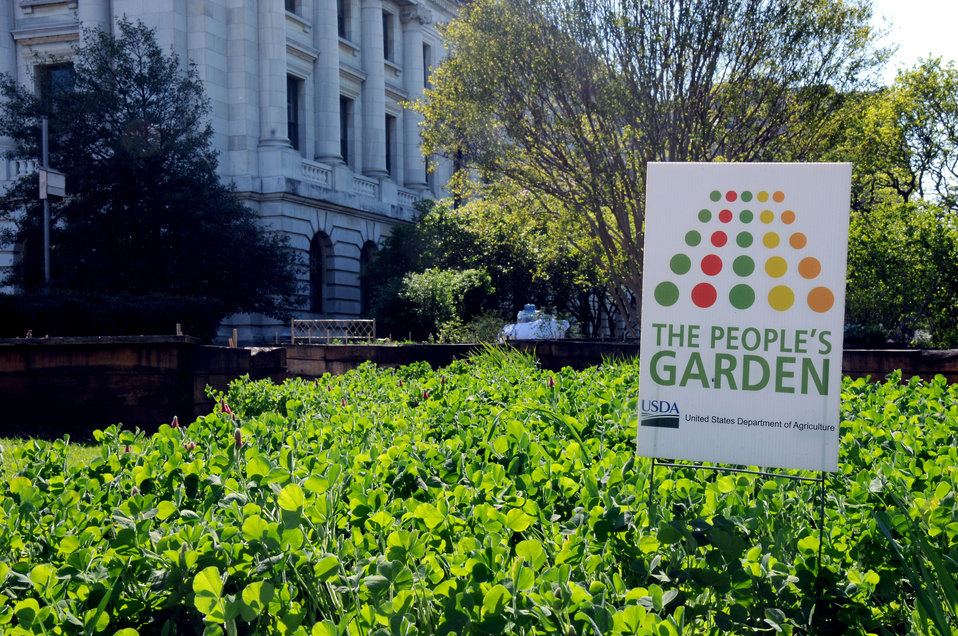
The People’s Garden at the U.S. Department of Agriculture (USDA) on April 9, 2010. Agriculture Secretary Tom Vilsack declared the grounds surrounding the USDA Headquarters in Washington, D.C. the first People's Garden named in honor of President Lincoln's description of the USDA as the 'People's Department' on February 12, 2009 in honor of Abraham Lincoln's 200th birthday.